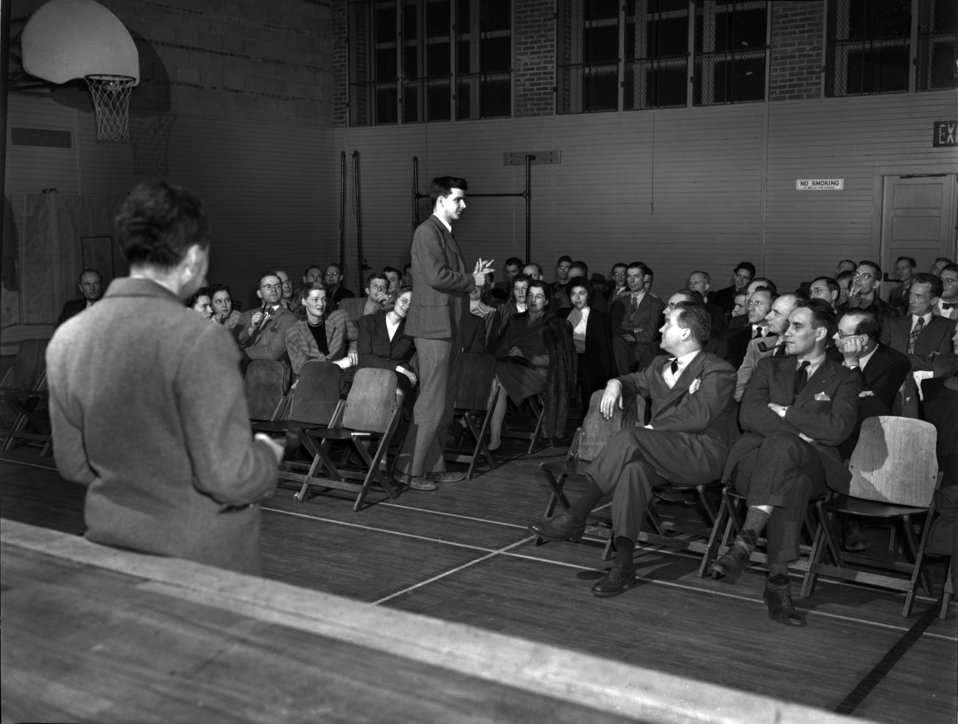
Atomic Engineers and Scientist Association Meeting Oak Ridge

3252-8 DOE photo Ed Westcott 1-14-1947 Oak Ridge Tennessee